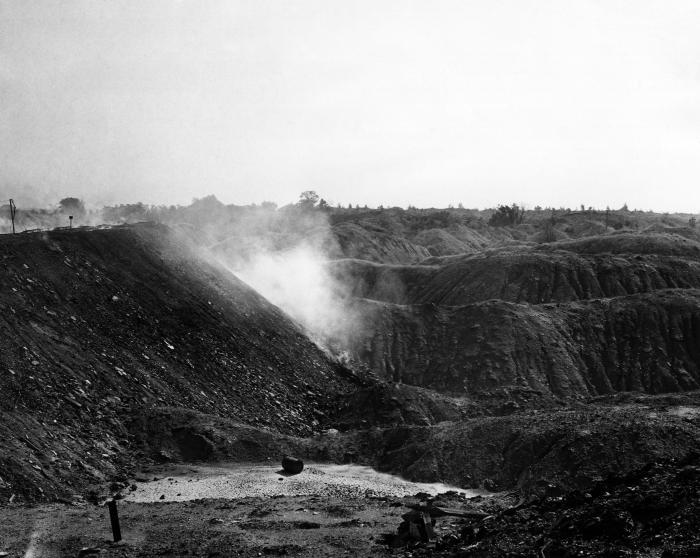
This was one of three images of a 1947, Indiana strip mining project underway, which depicted a bucket crane's exhaust plume emanating from behind a ridge of piles of raw material that had accumulated as a result of the excavation of an unknown resource. This image was provided by the Center for Disease Control's (CDC), National Institute for Occupational Safety and Health (NIOSH). See PHIL 9552 and 9553 for two additional images of this scenario.